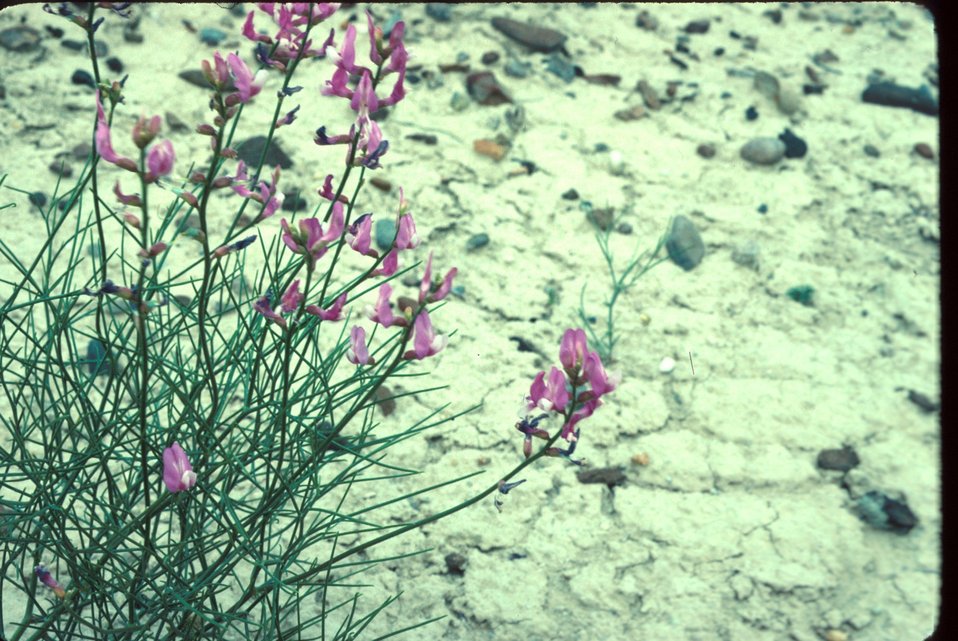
Astragalus toanus Milkvetch Wildflower